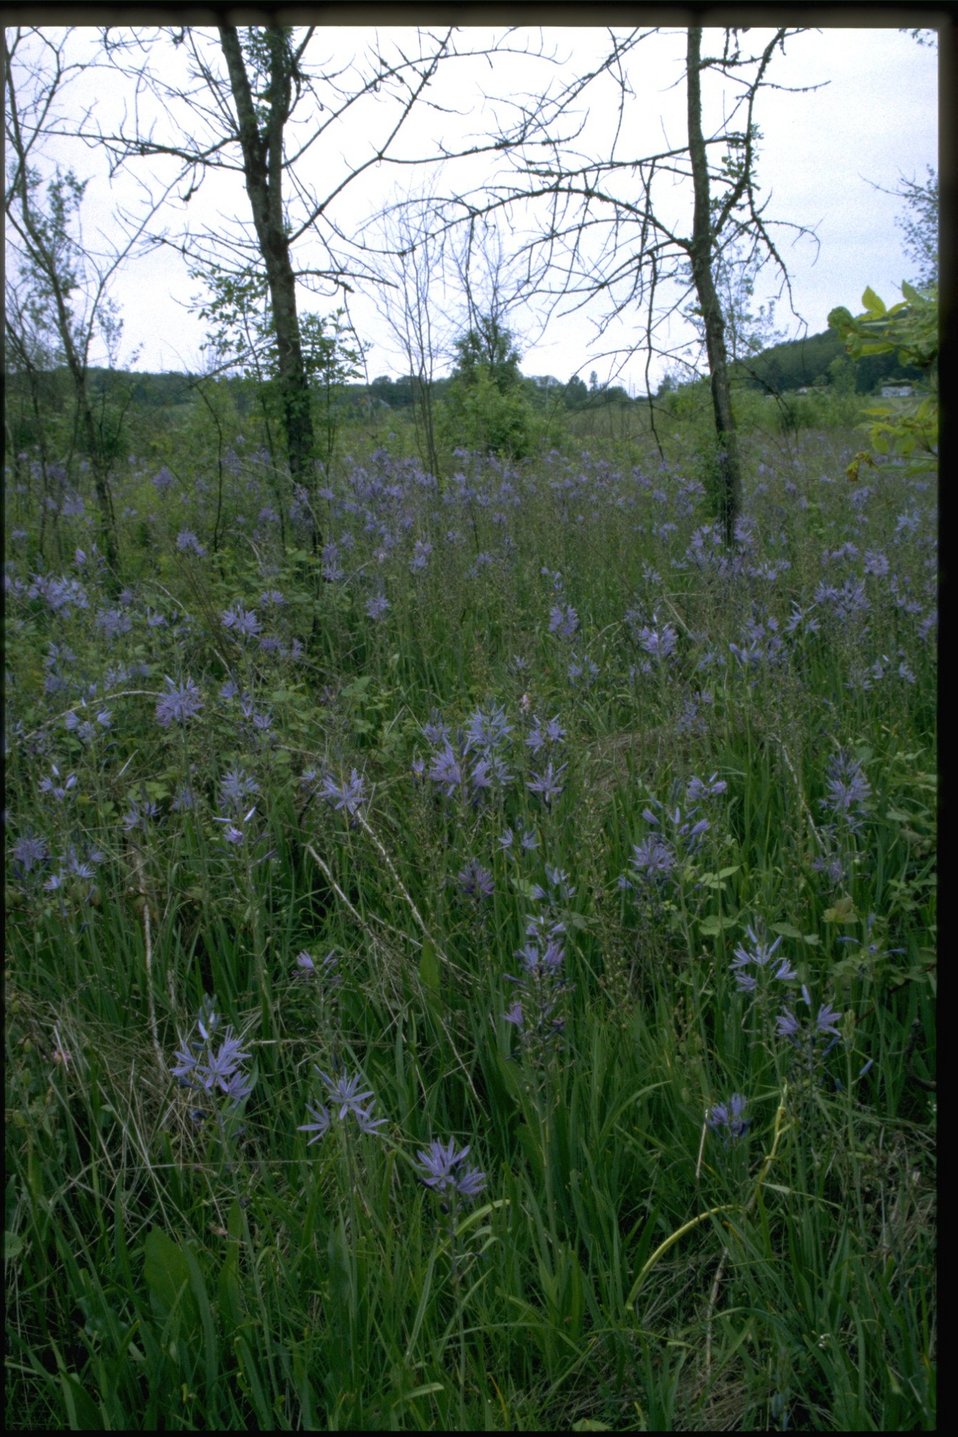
Farshot of Camassia quamash.